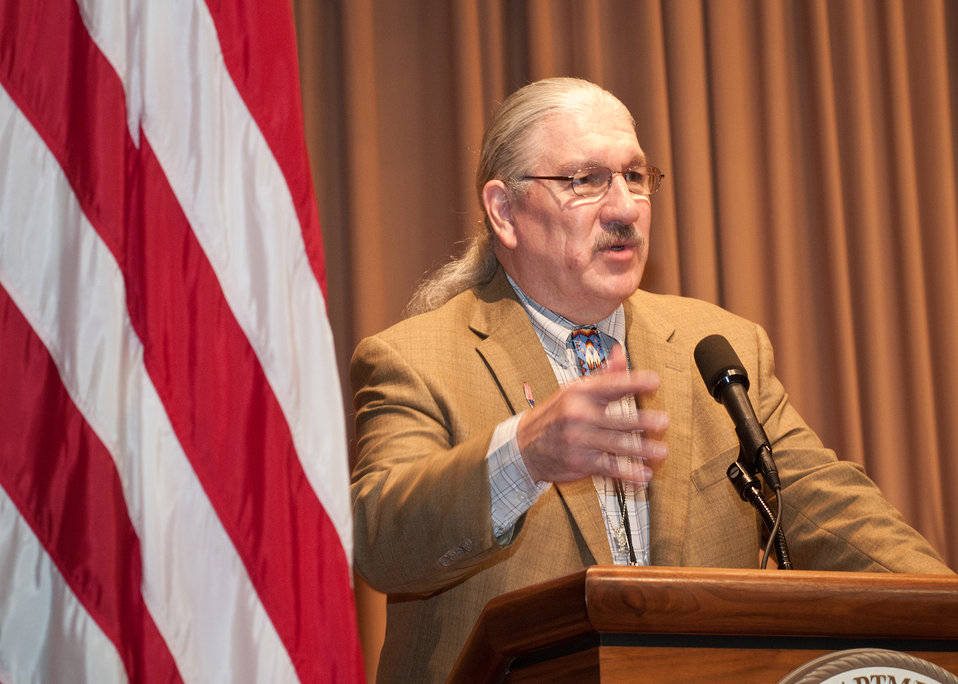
Arthur “Butch” Blazer, Deputy Under Secretary, Natural Resources and Environment offered his experience’s and opportunities as the keynote speaker at the United States Department of Agriculture, Native American Indian Heritage Month celebration in Washington, DC, on Wednesday, November 16, 2011, The theme of this year’s event is, “Native Youth: Cultivating the Future.”